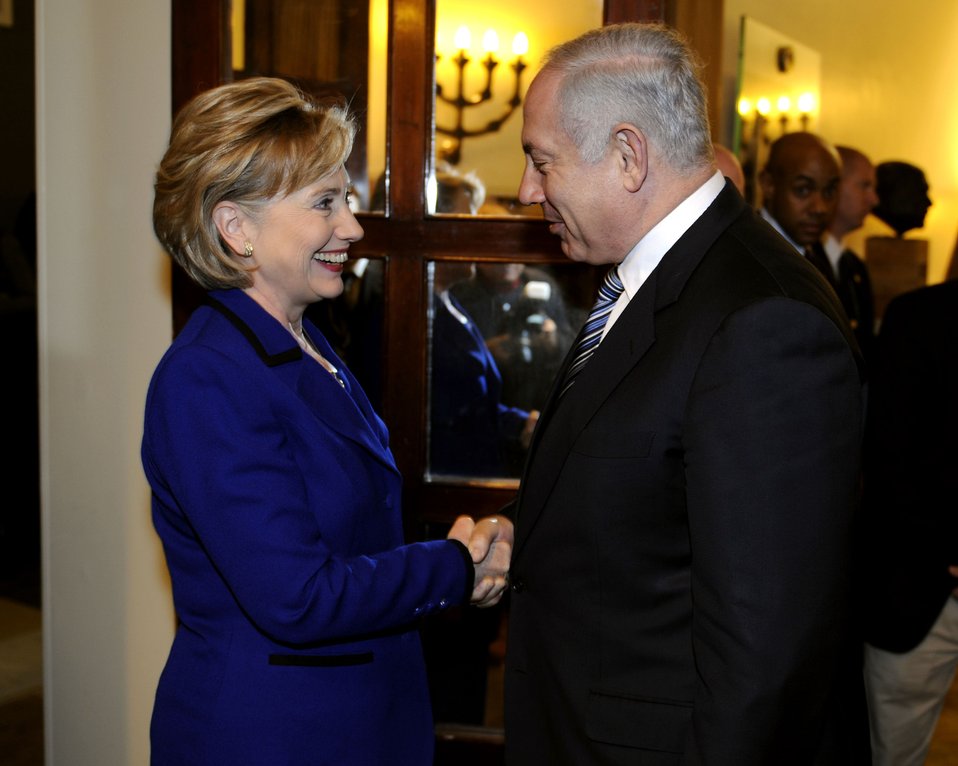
Secretary Clinton before her meeting with Israeli Prime Minister-Designate Benyamin Netanyahu at the King David Hotel, Jerusalem March 3, 2009.